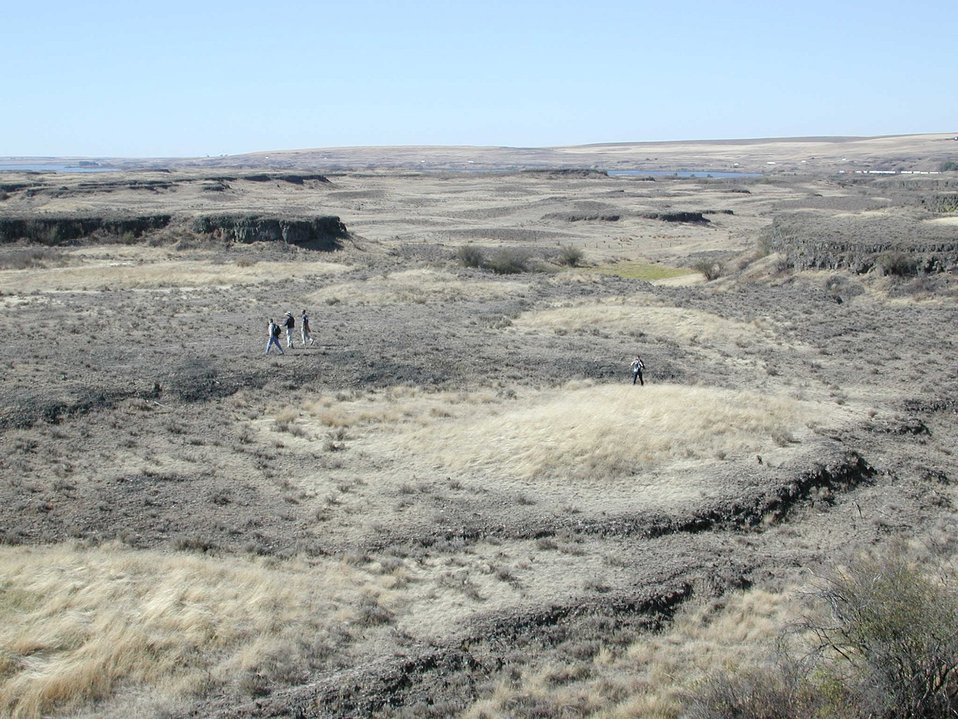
Typical mima mound structurtes to the west of the columnar basalt a the Sprague Public Lands Day tour.